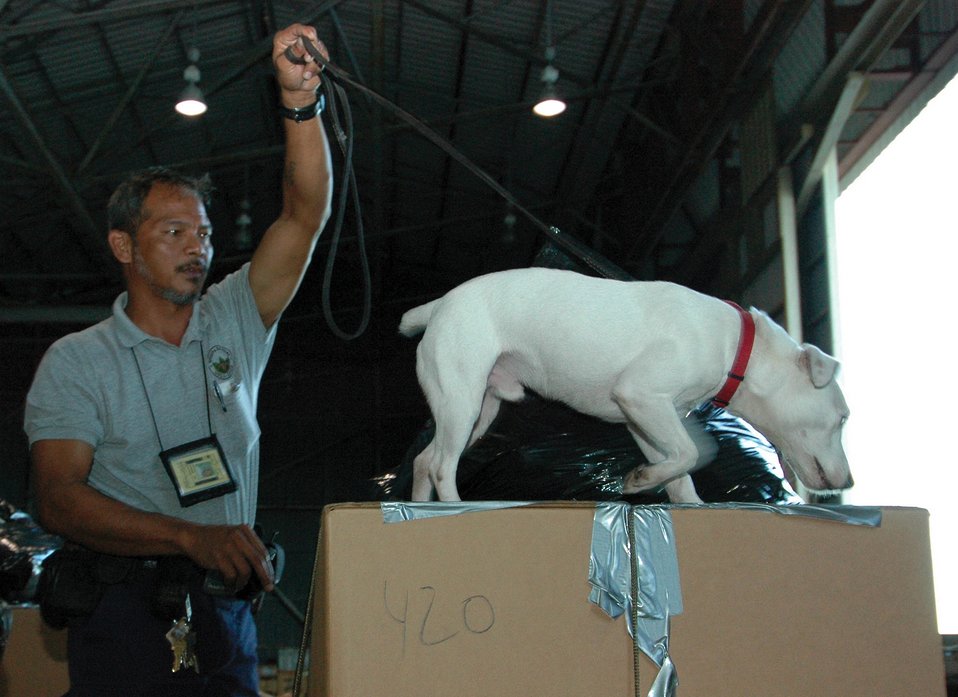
Airmen 'drop' in to help islanders

ANDERSEN AIR FORCE BASE, Guam (AFPN) -- Tony Manibusan and his dog, Sawyer, search for brown tree snakes among pallets destined for the Micronesian islanders The donated food items will be used in this year's Operation Christmas Drop, a 53-year-old tradition. C-130 Hercules aircraft from Yokota Air Base, Japan, loaded up the donated gifts and